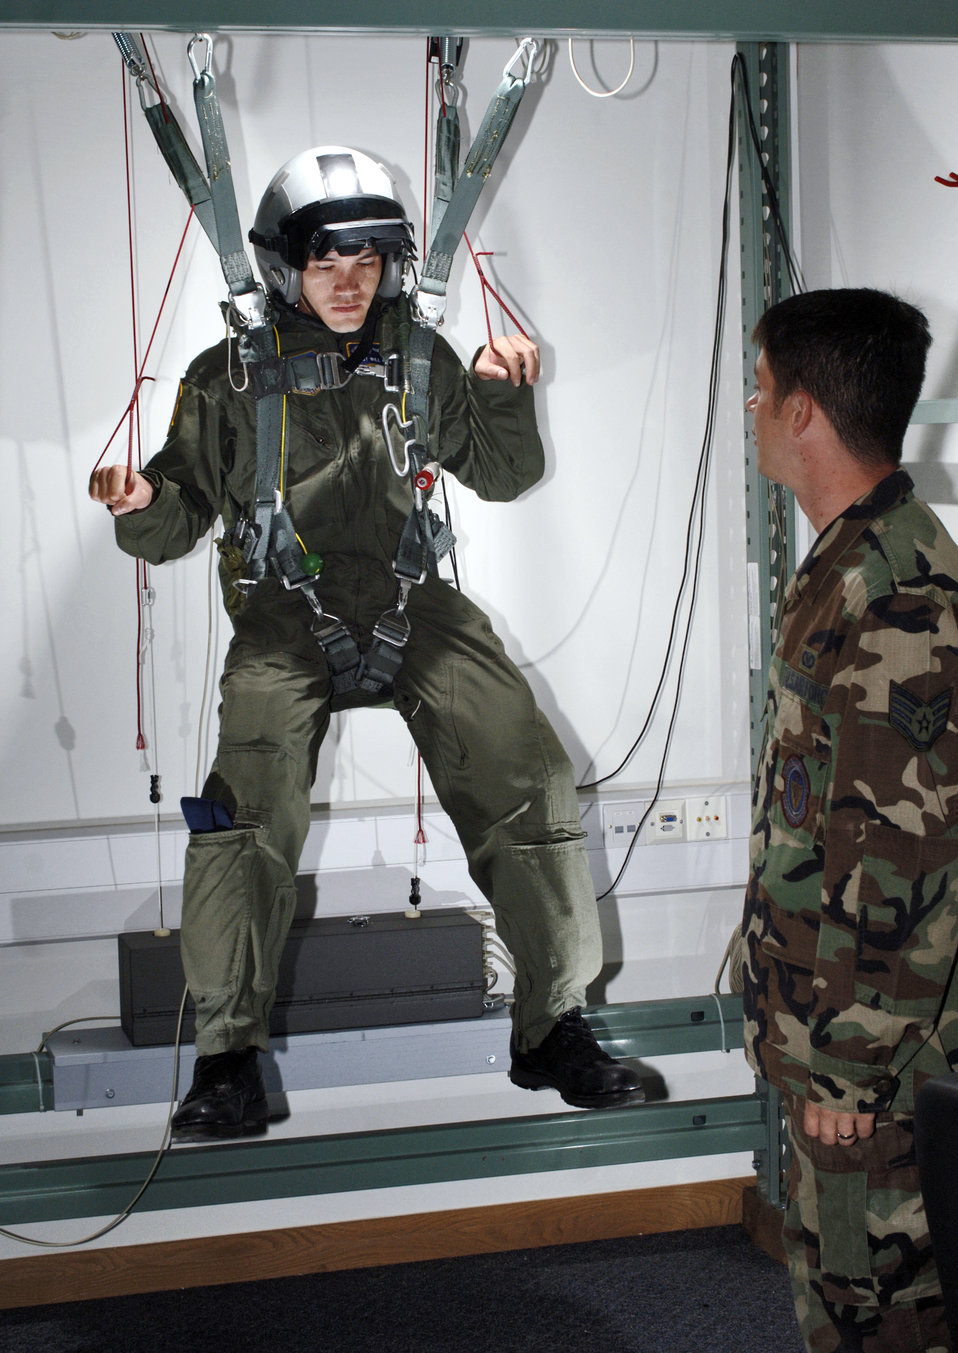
Parachute practice makes perfect

Staff Sgt. Will Perdew practices his parachute control with instruction from Staff Sgt.Alan Pratt during a training session in the life support facility at Royal Air Force Mildenhall, England, on Thursday, Aug. 3. Sergeant Pratt is an aircrew life support specialist with the 100th Operations Support Squadron. Sergeant Perdew is a KC-135 Stratotanker boom operator with the 351st Air Refueling Squadron.